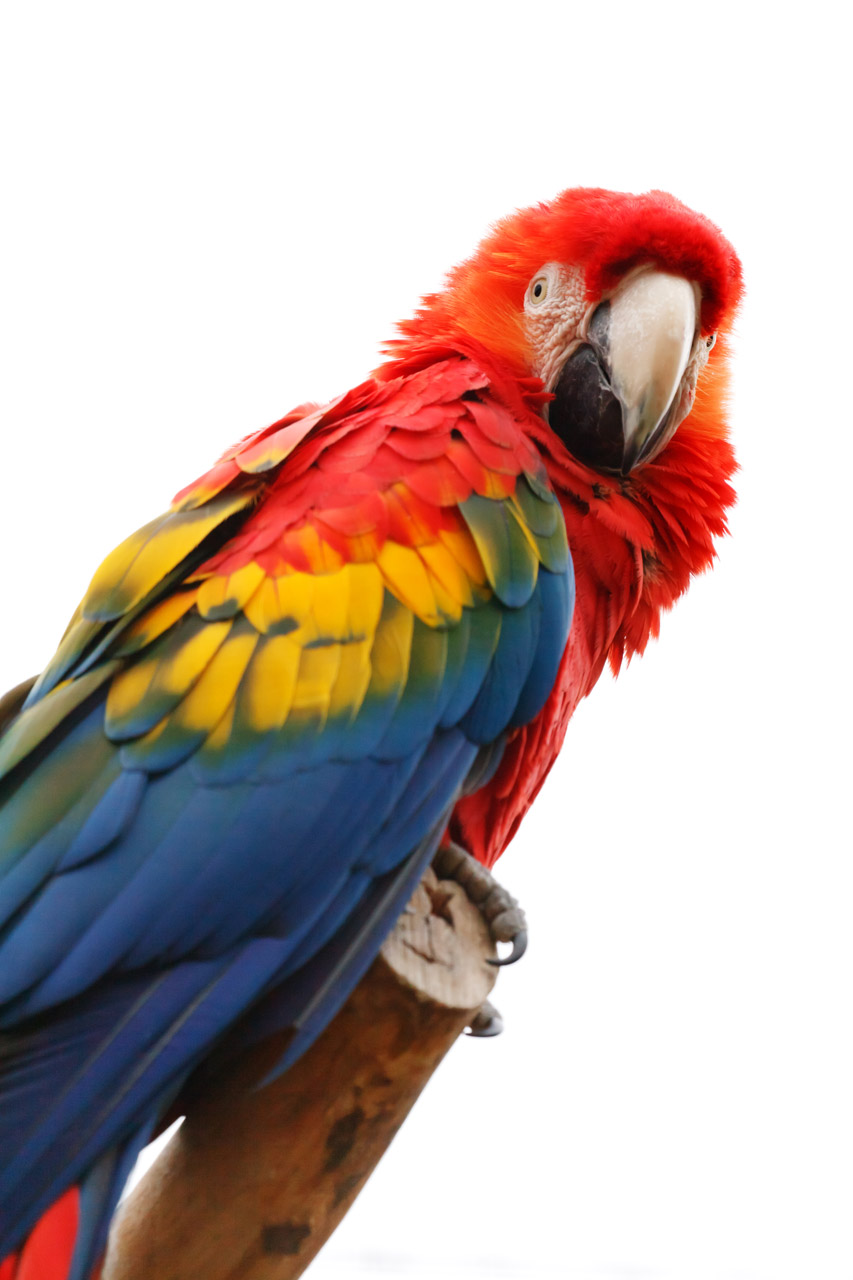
Colorful macaw

Scarlet macaw isolated on white background.